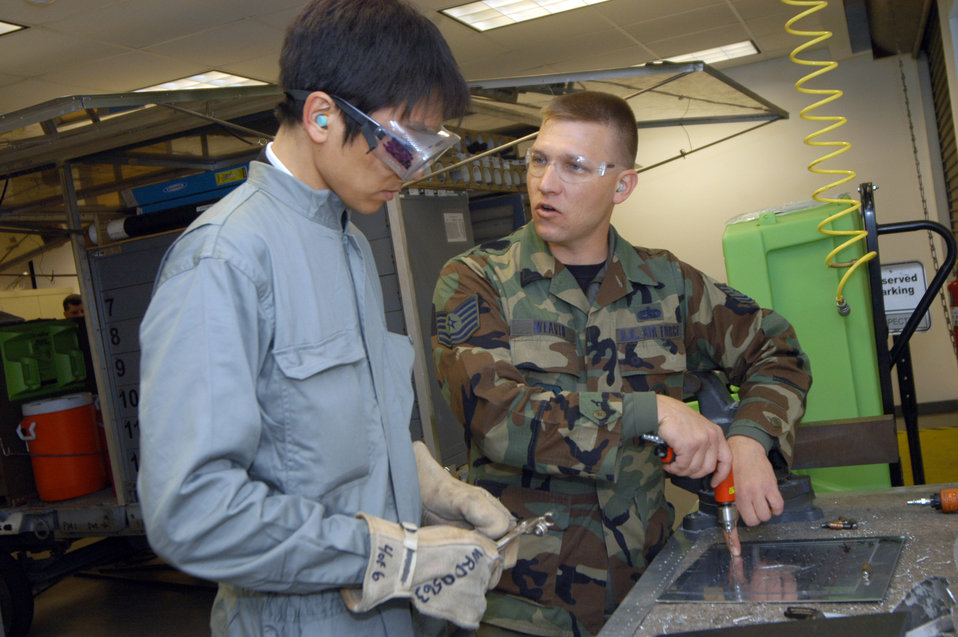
JASDF personnel learn aircraft battle damage repair

Tech. Sgt. Glen Weaver demonstrates a battle damage repair technique to Tomohiro Matsuo Feb. 14. Five members of the Japan Air Self-Defense Force visited Robins Air Force Base, Ga., to improve their battle-damage repair skills. Sergeant Weaver is with the 653rd Combat Logistics Support Squadron.